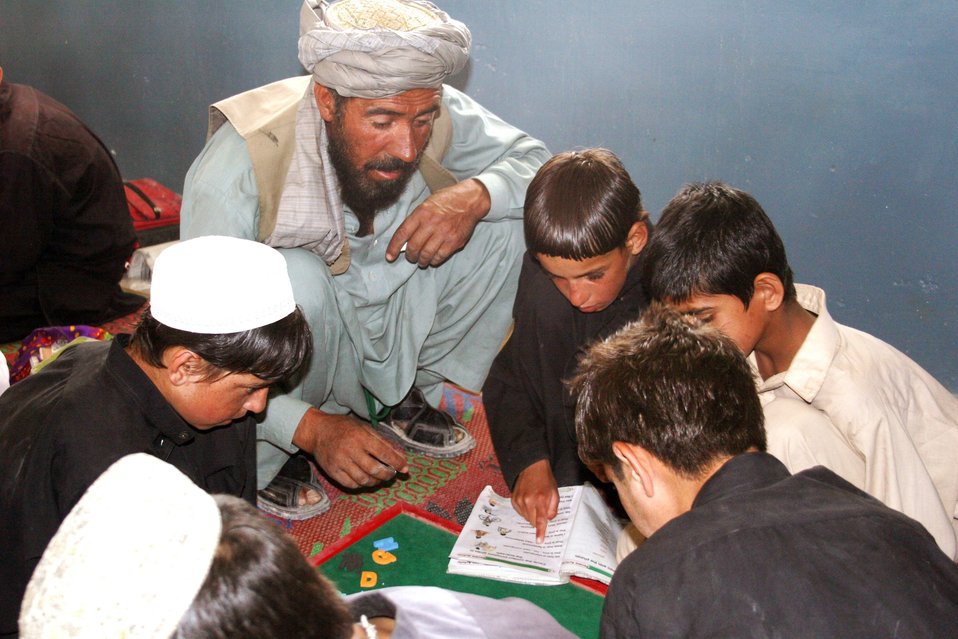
Reading 04